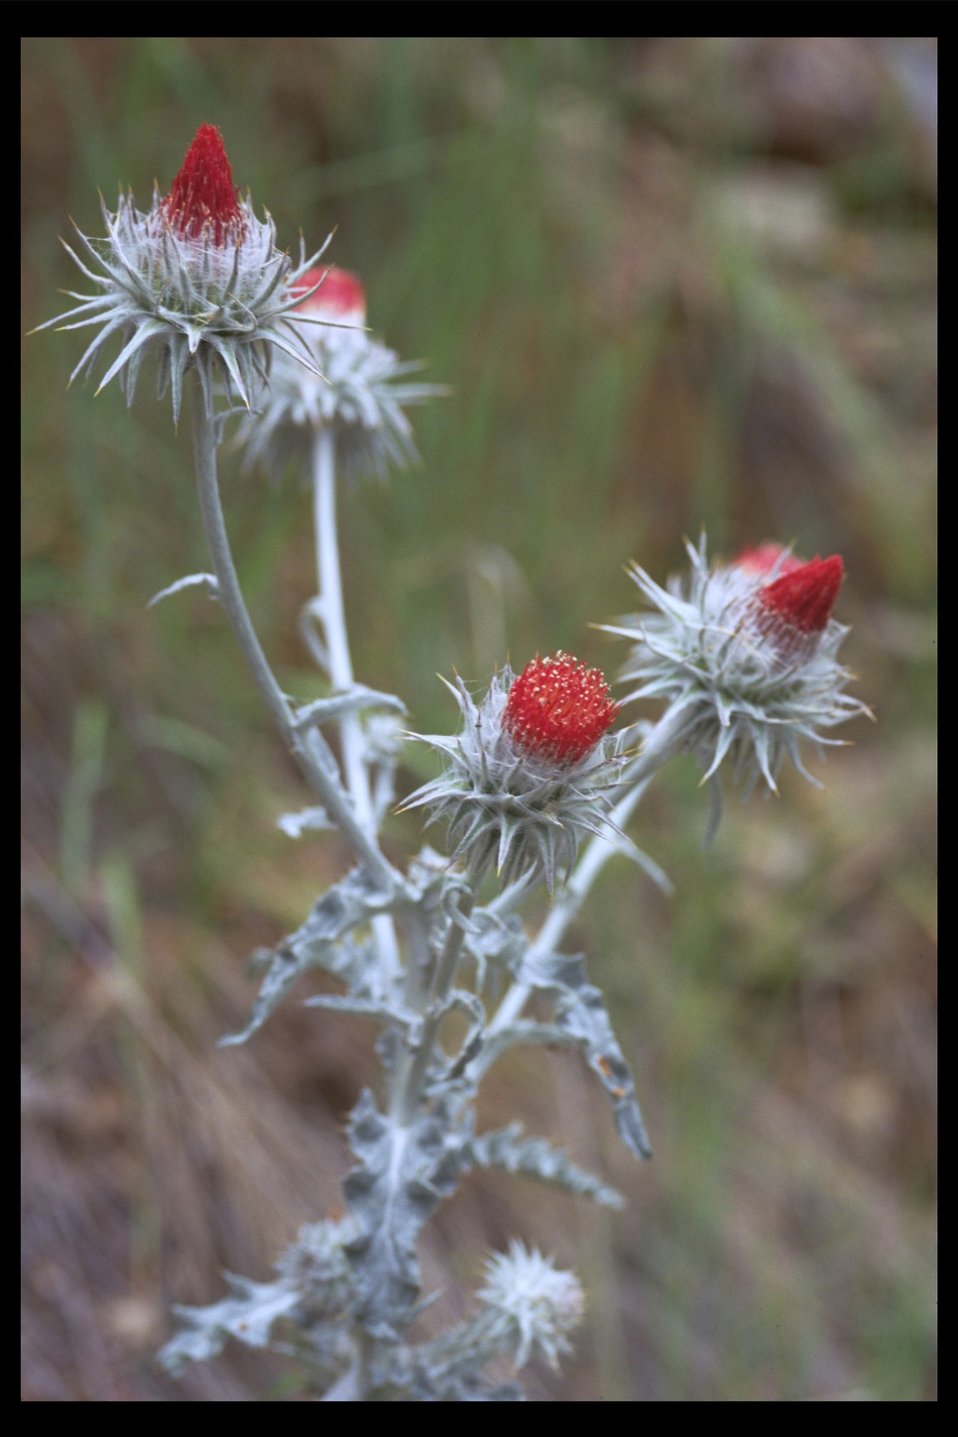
Unknown white thistle at Upper Trail.